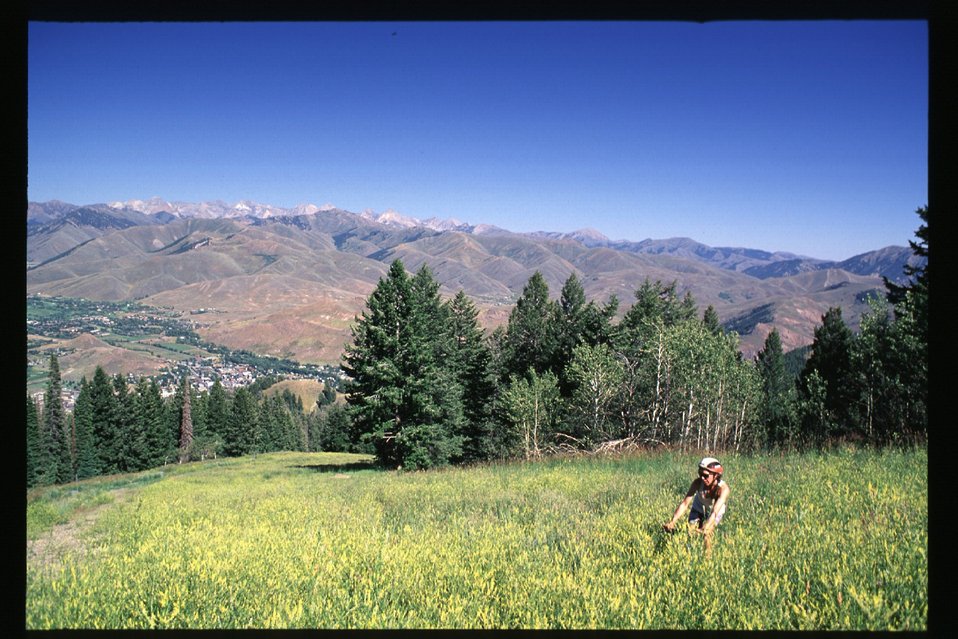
Recreation Scenic Biker Shoshone Field Office USRD Upper Snake River District